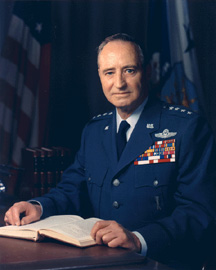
Gen. John McConnell

Gen. John Paul McConnell, the sixth Air Force chief of staff.